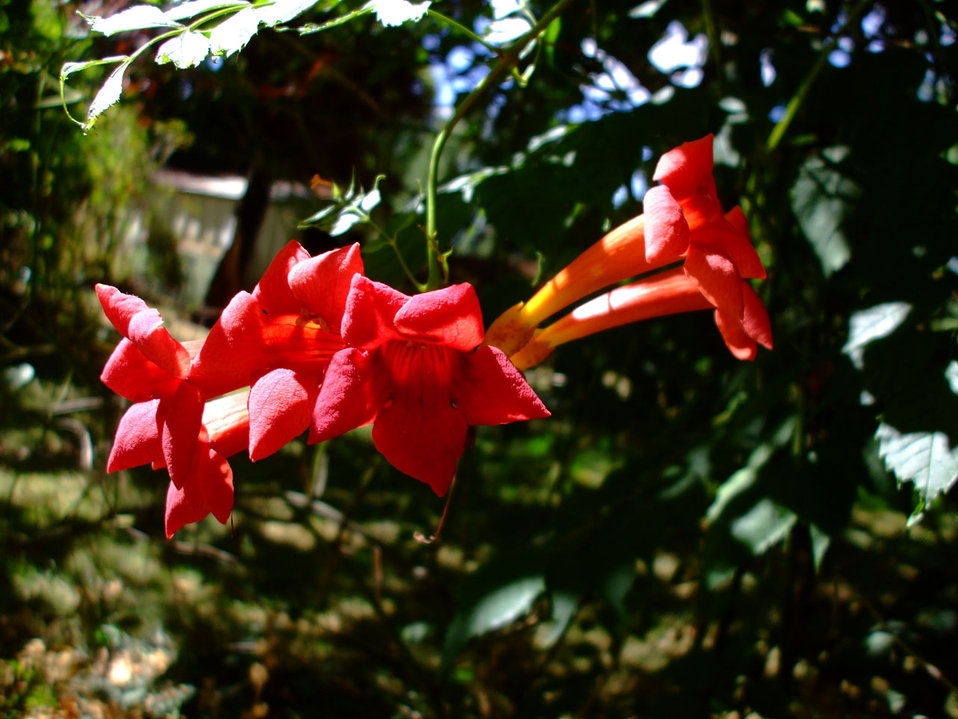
The trumpet vine

Trumpet flowers in august.